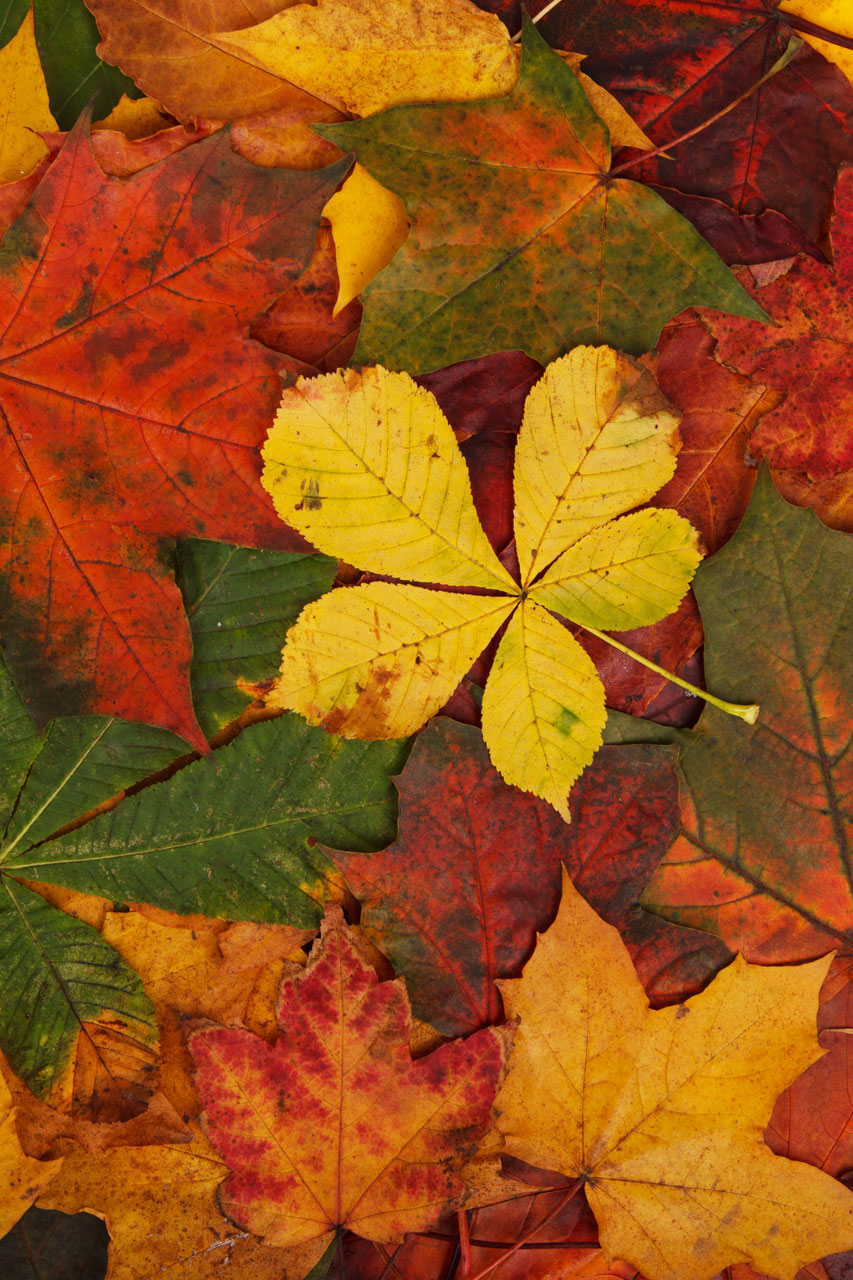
Autumn leaves pattern

Colorful autumn leaf texture.